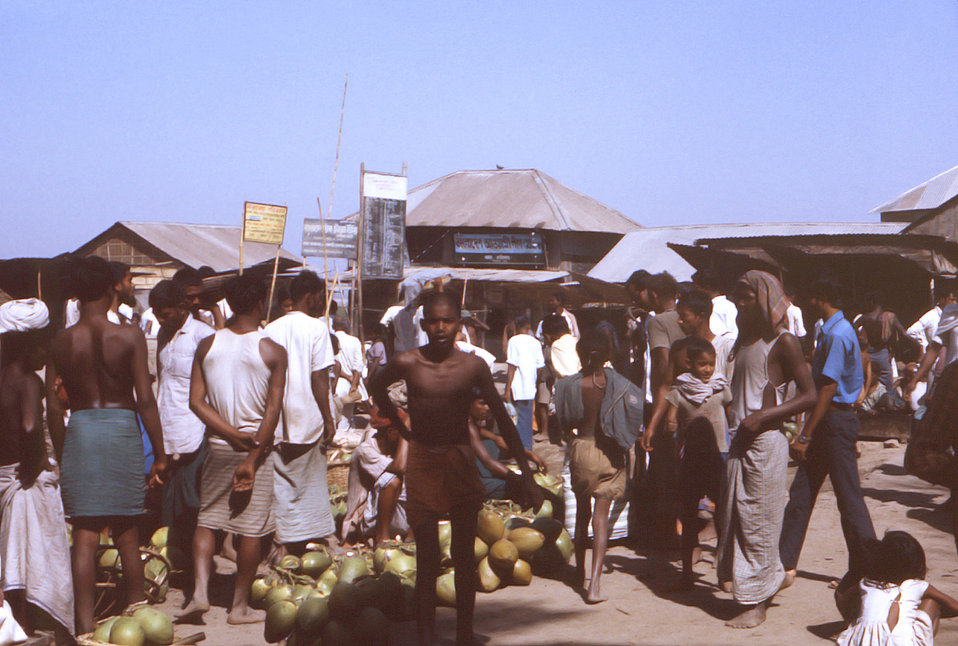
This image depicted numbers of Bengali townsfolk gathered in what appeared to be a street market venue where coconuts were being sold. The date was believed to have been sometime in the early 1970s, during the worldwide smallpox eradication efforts.The Disease